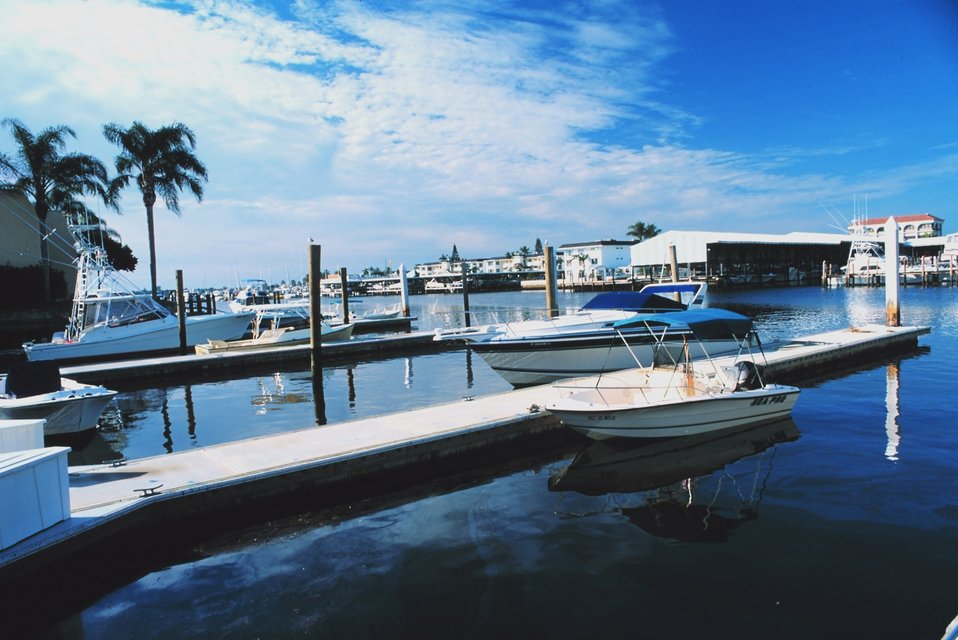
Port-O-Call Marina is home to recreational fishing boats